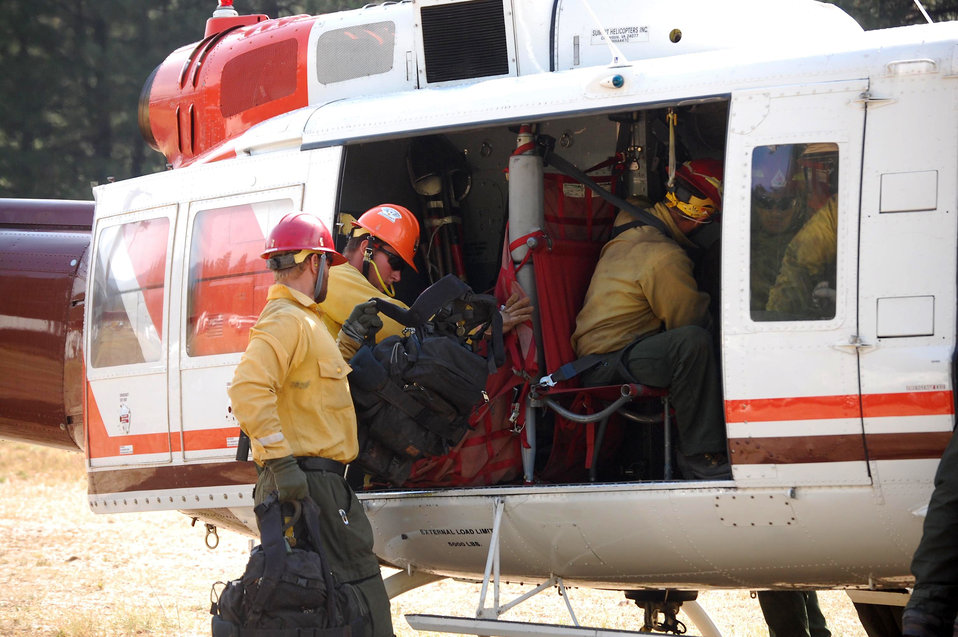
Firefighters with gear board a helicopter to be transported to advance area to fight Ridge Fire. The Ridge Fire in the Boise National Forest, ID near Lowman, ID began on Jul. 16, 2013 by lightning and has consumed approximately 5,143 acres. The Ridge Fire is approximately 20% contained.